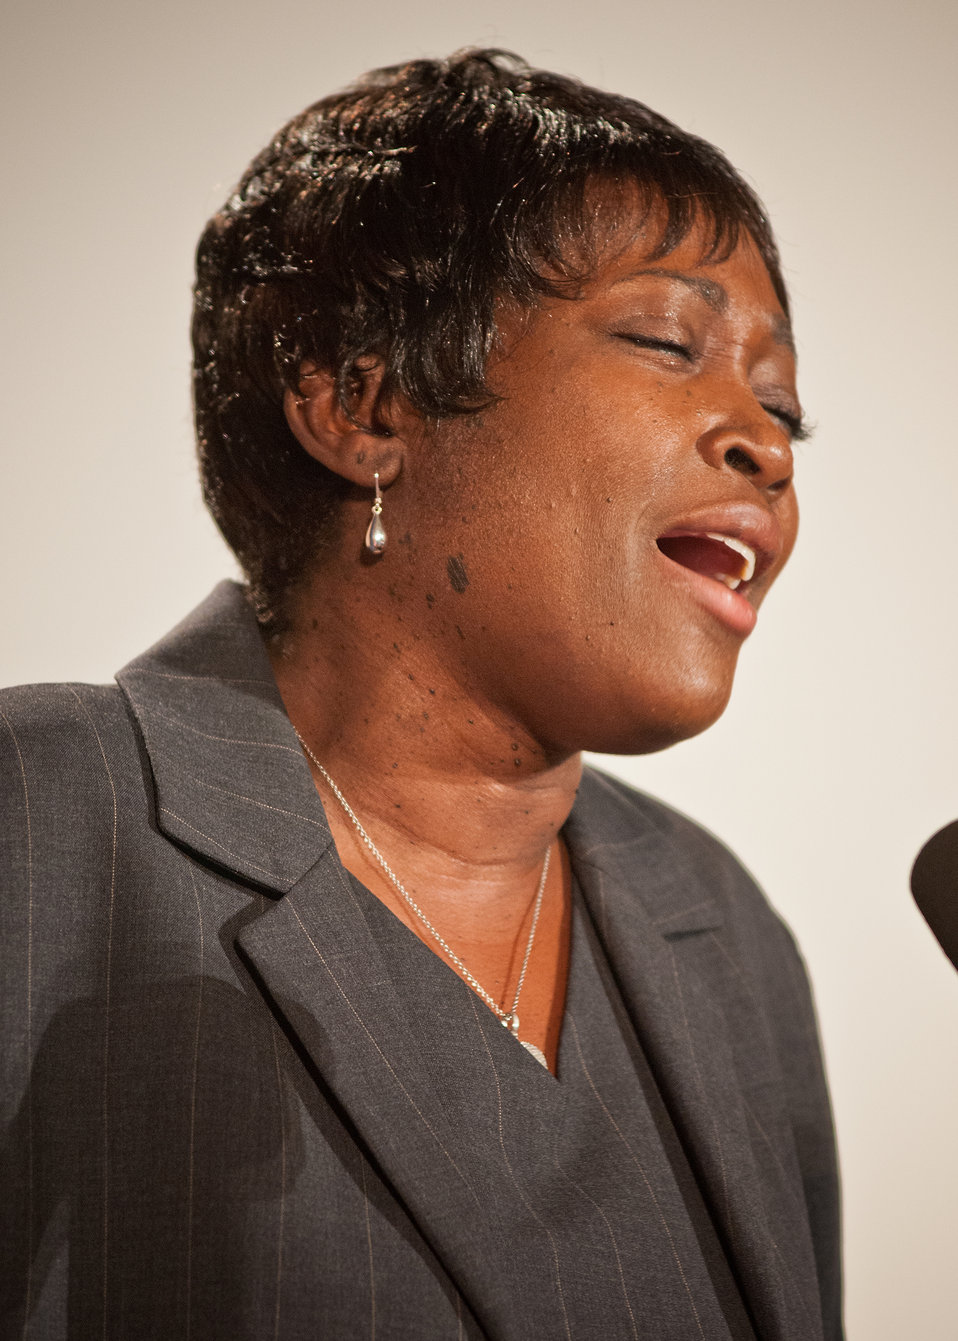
Carolyn Parker, Director, Office of Advocacy and Outreach sang the, “Battle Hymn of the Republic” at the National Service Day and Martin Luther King Celebration in honor of Dr. Martin Luther King Jr.’s contributions to the Civil Rights Movement at the United States Department of Agriculture in Washington, D.C., on Thursday, January 12, 2012.